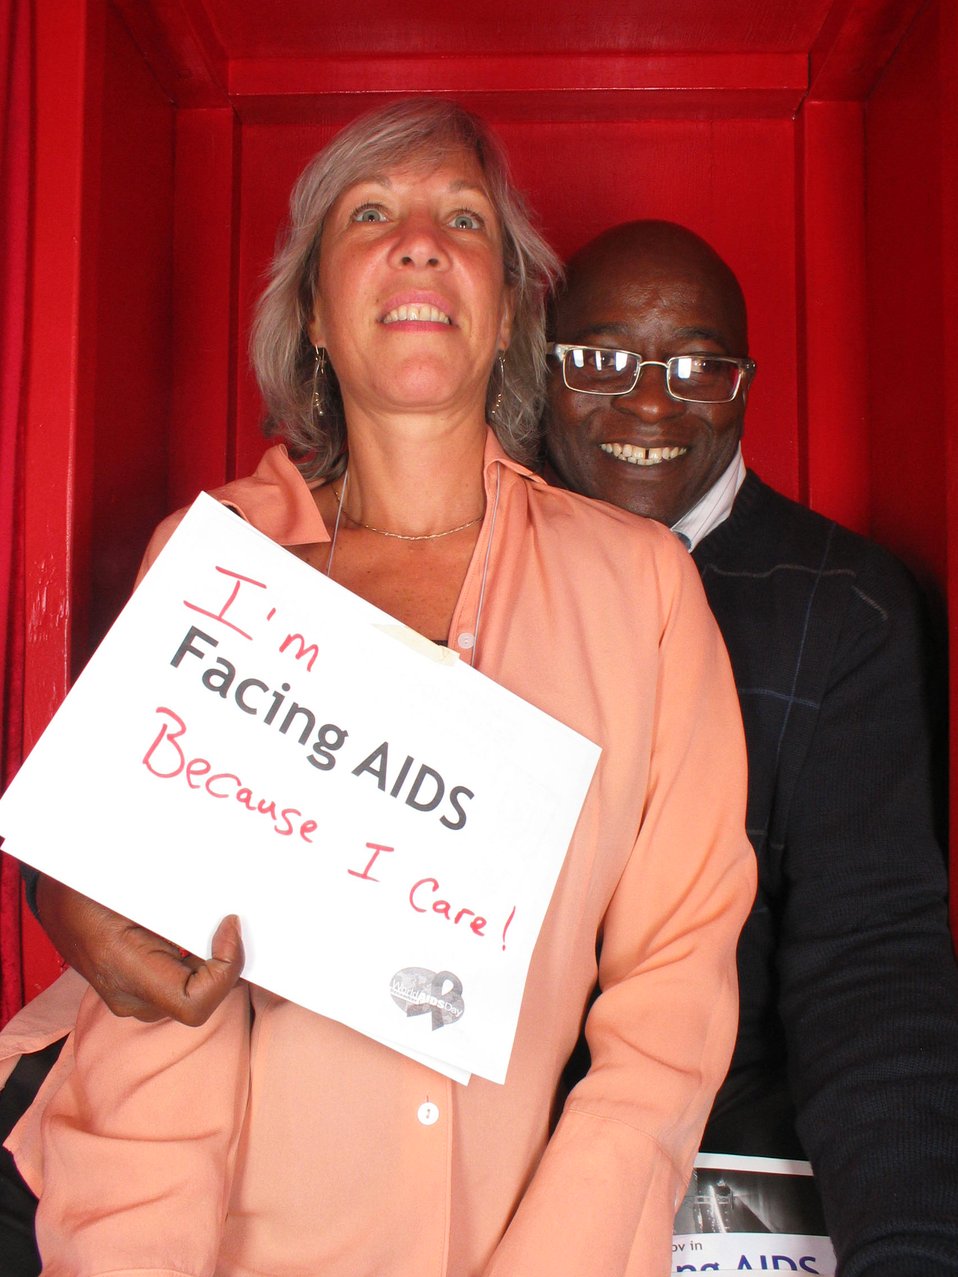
I am Facing AIDS because I care!